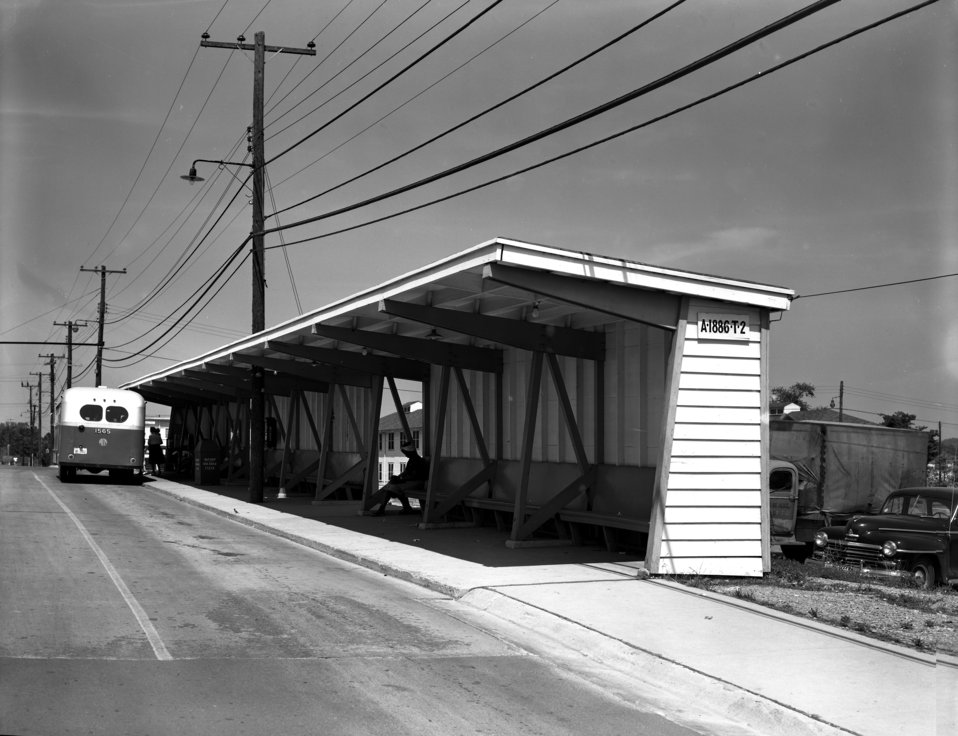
Bus Stop Jackson Square Oak Ridge 1949

5584-2 DOE photo Ed Westcott 6-8-1949 Oak Ridge Tennessee